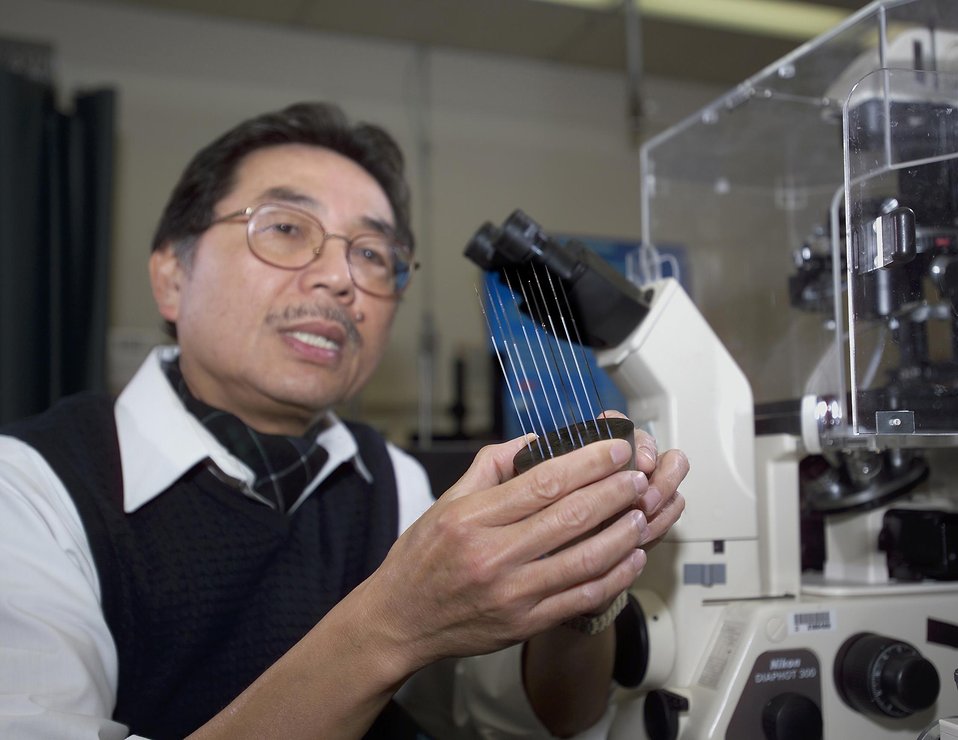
OAK RIDGE NATIONAL LABORATORY RESEARCHER EXAMINES THE NANOPROBE, DEVELOPED AT THE LAB.

THE ORNL NANOPROBE IS BASED ON A LIGHT SCATTERING TECHNIQUE THAT CAN DETECT AND ANALYZE CHEMICALS, EXPLOSIVES, DRUGS AND MORE AT A THEORETICAL SINGLE-MOLECULE LEVEL. THE DEVICE COULD GIVE A BOOST TO A TECHNOLOGY WITH PROVEN ENVIRONMENTAL, FORENSICS, AND MEDICAL APPLICATIONS. THE PROBE IS AN OPTICAL FIBER TAPERED TO A TIP MEASURING 100 NANOMETERS WITH AN EXTREMELY THIN COATING OF NANOPARTICLES OF SILVER, WHICH INDUCES THE SURFACE-ENHANCED RAMAN SCATTERING (SERS) EFFECT.